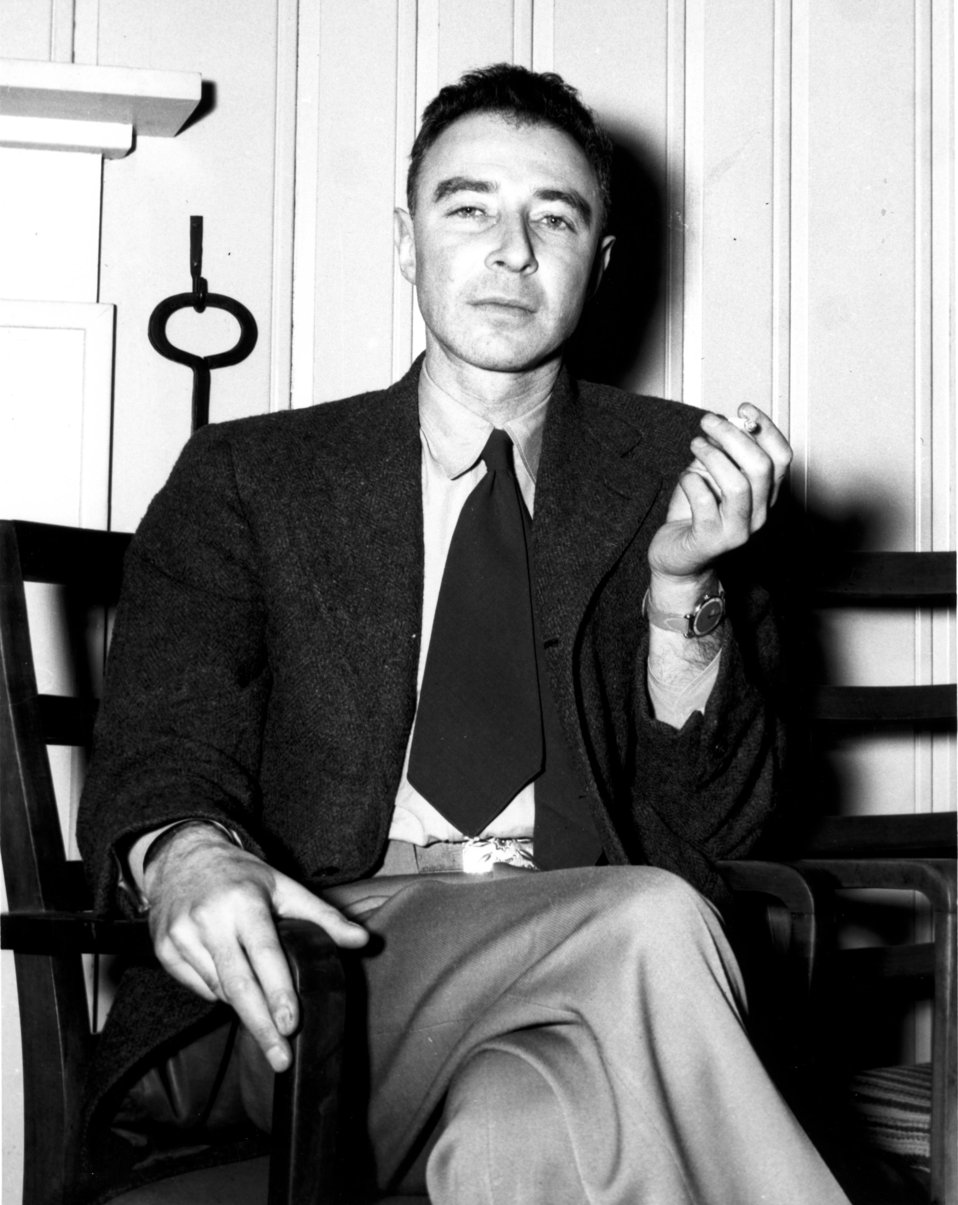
Oppenheimer at Oak Ridge